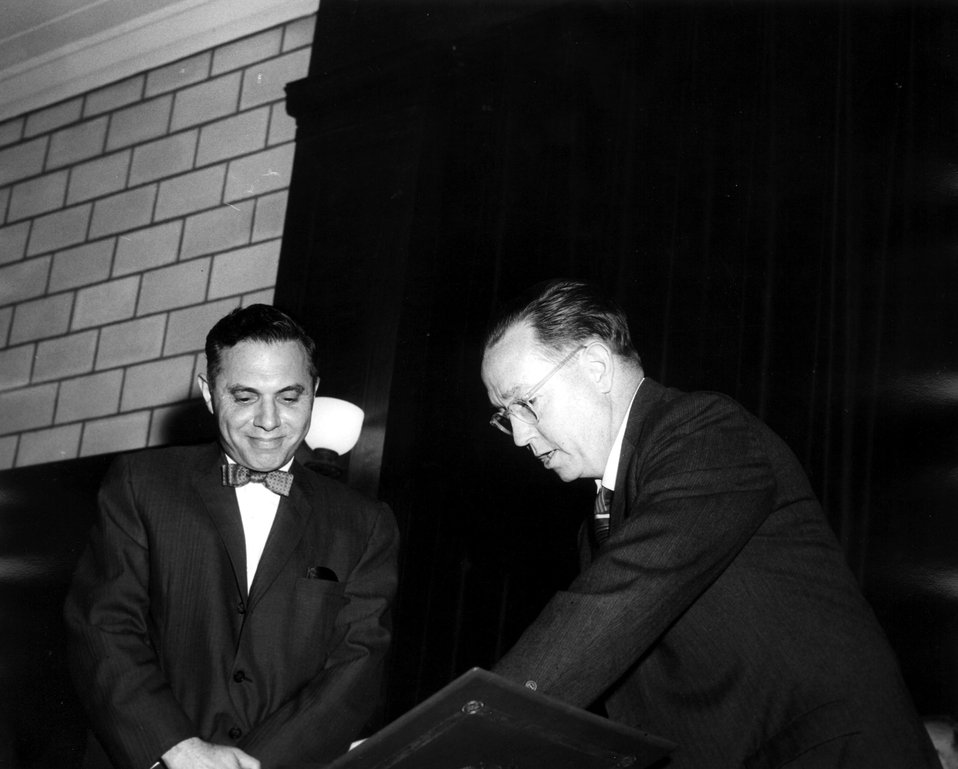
Lawrence Award, 1966.